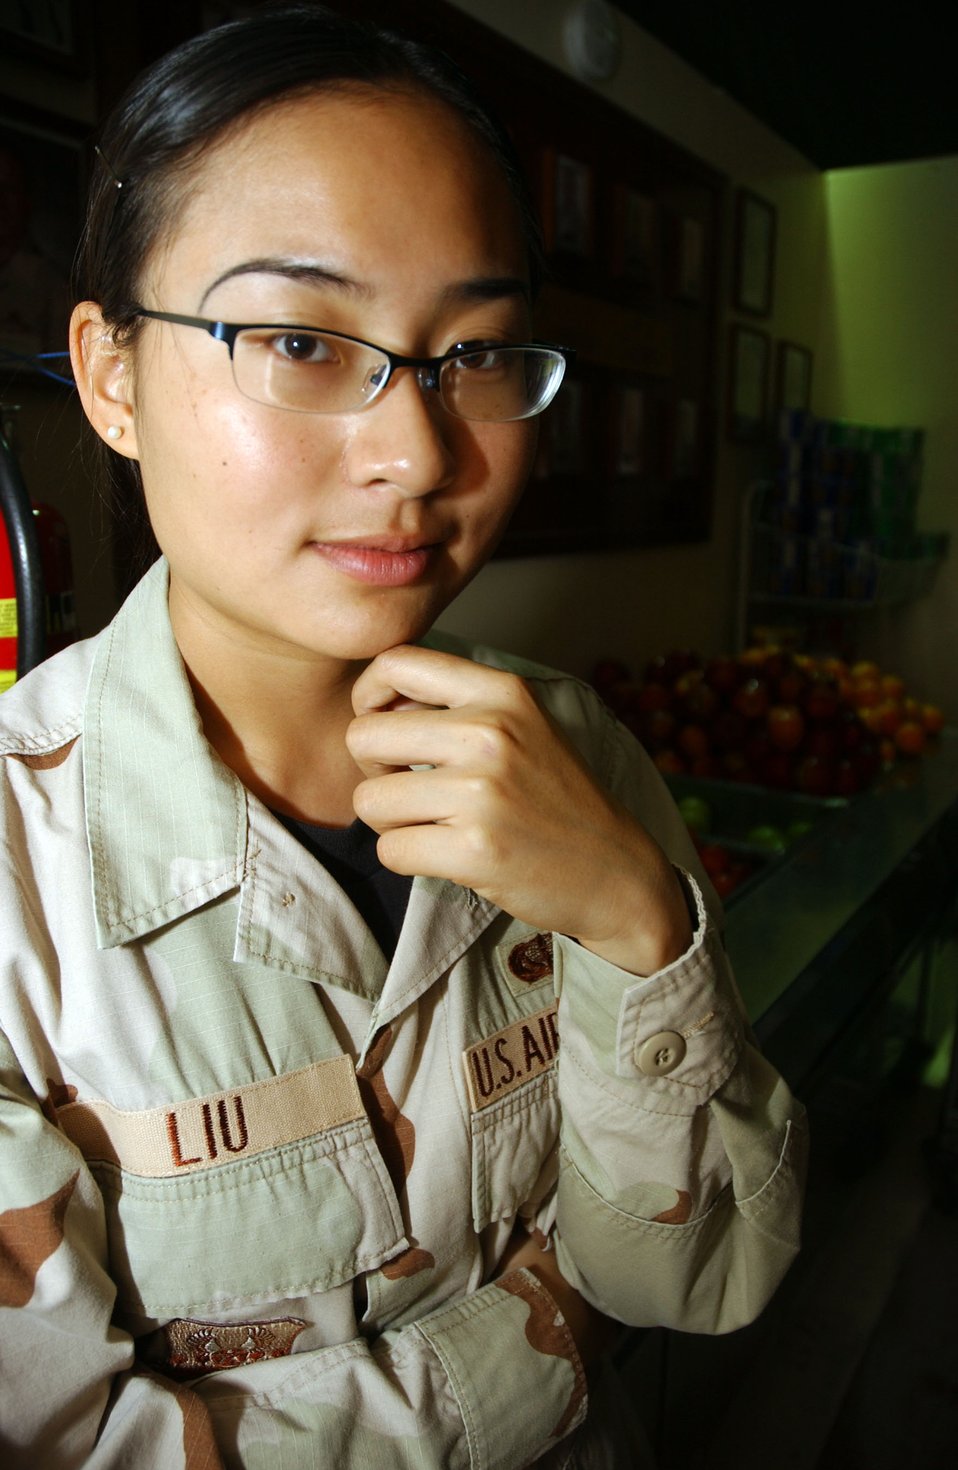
Immigrant crosses into the blue

SOUTHWEST ASIA (AFPN) -- Airman 1st Class Yi Liu immigrated from China to the United States in 2003 when she was 21 years old. Shortly after, she joined the Air Force. She is now assigned to the 379th Expeditionary Services Squadron at a forward-deployed location.